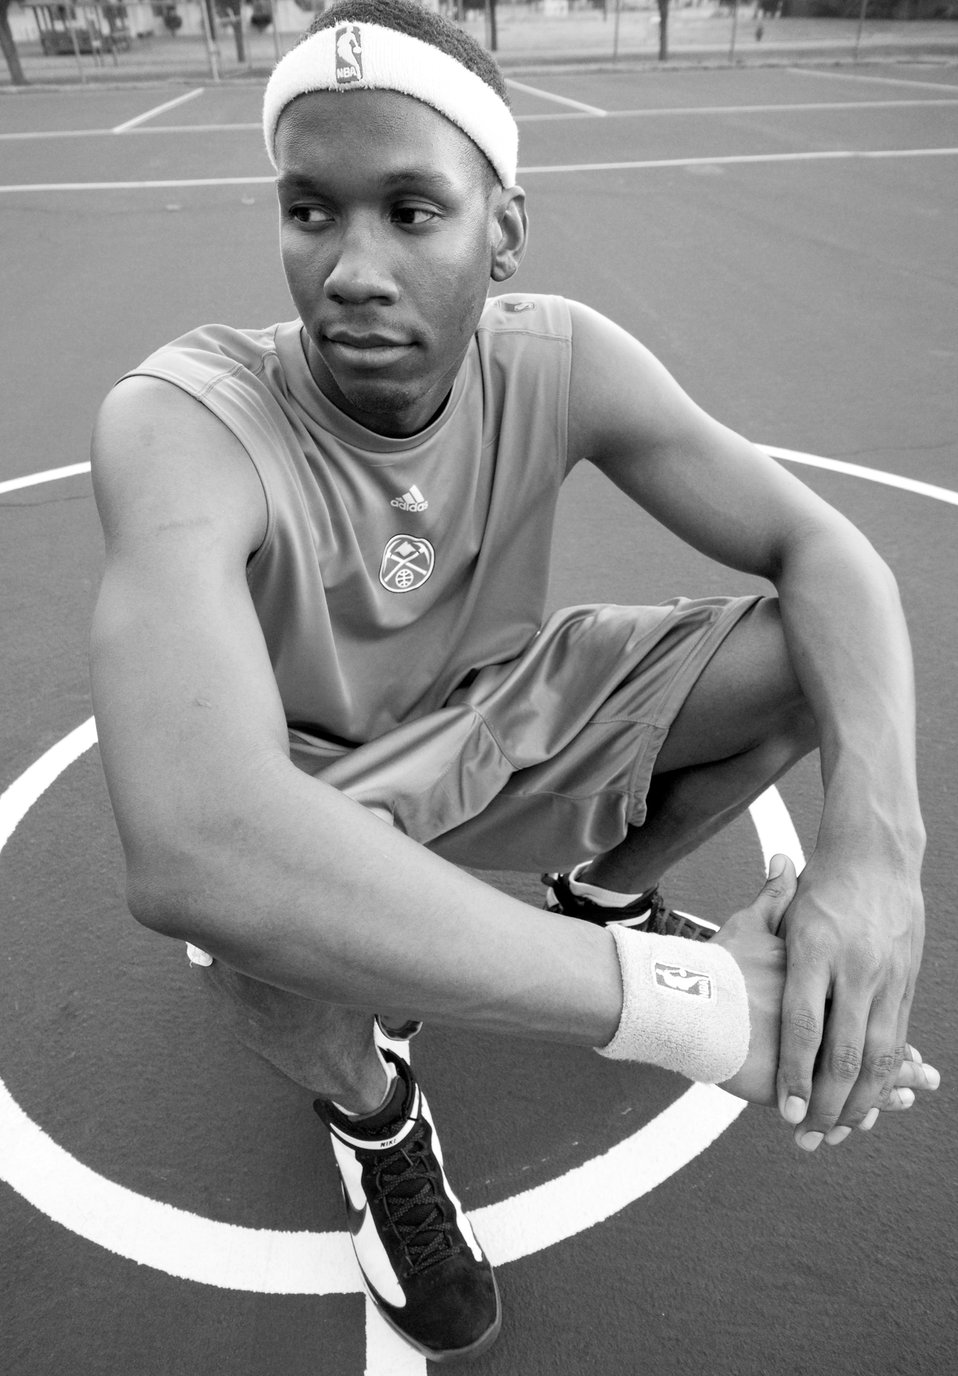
Antoine Hood

Capt. Antoine Hood had a celebrated college basketball career at the Air Force Academy from 2002 through 2006, but has yet to realize his dream of playing in the NBA. With his active-duty commitment now complete, the reservist says he's ready to take the next step and make that dream a reality. Captain Hood is assigned 919th Special Operations Wing.